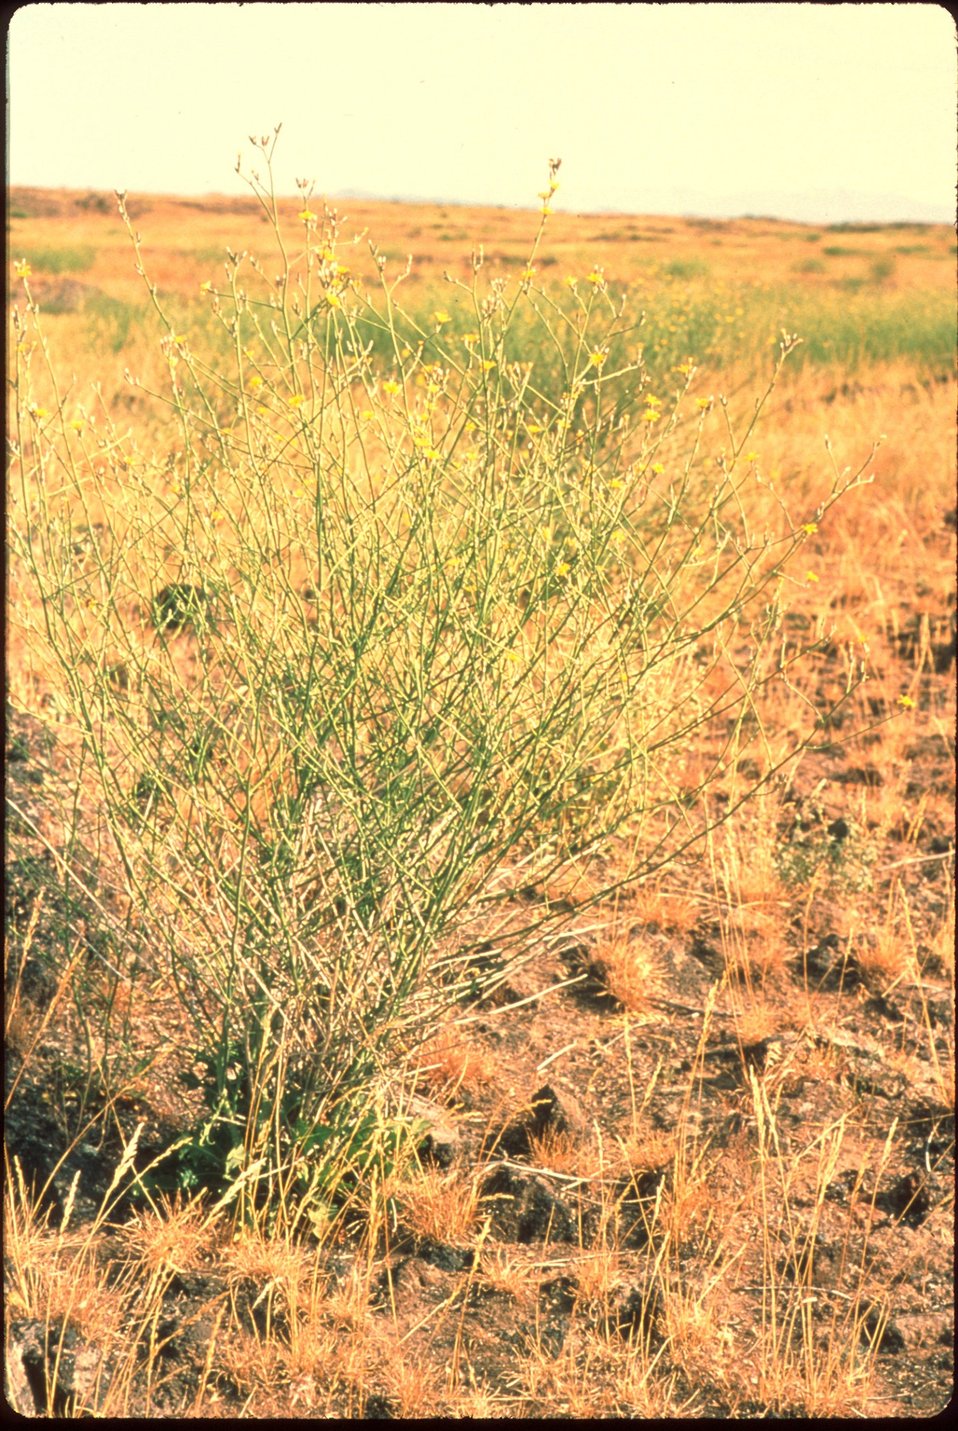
Rush Skeleton Weed Idaho vegetation Plants in BLM